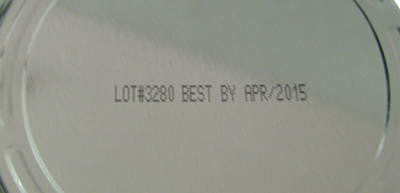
RECALLED – Chocolate mix

April 3, 2014 – Product Recall – Koru Pacific Packaging Announces a Voluntary Recall for One Lot # AH!LASKA® Organic Cocoa Non-Dairy Chocolate Mix, 12 oz. Canister Due to Possible Milk Allergen.